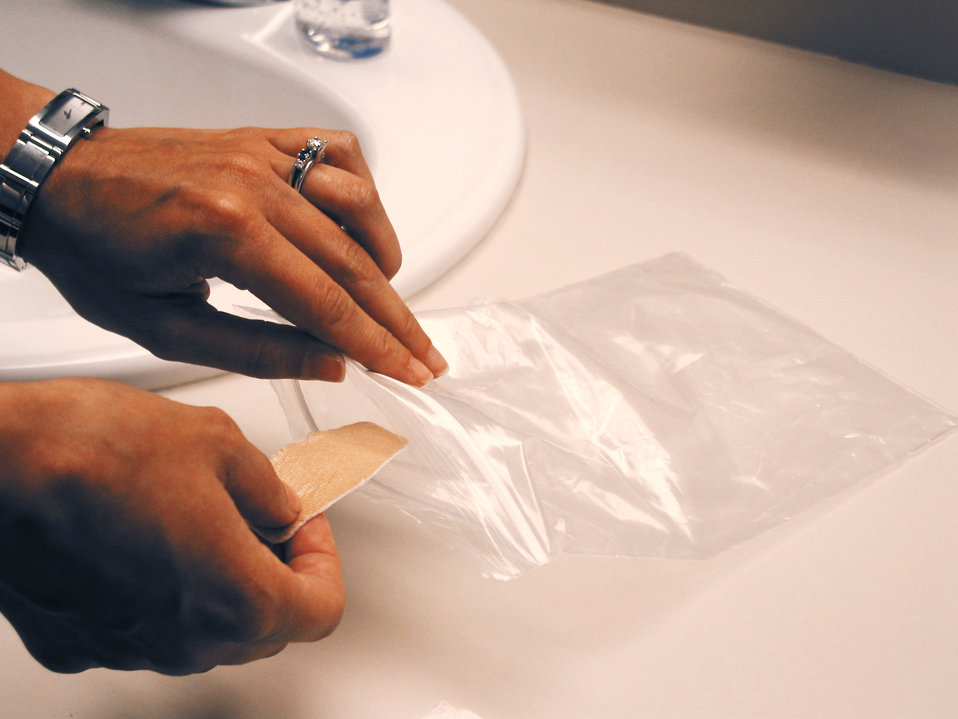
This smallpox vaccinee is shown placing a dirty waterproof bandage into a sealable plastic bag.